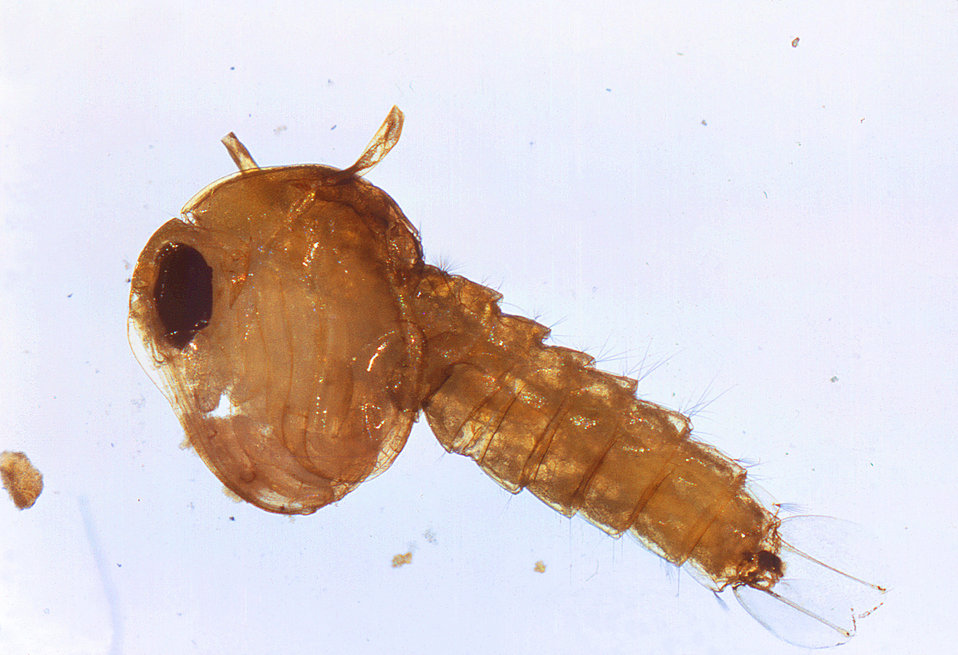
This is an enlarged view of a Culex quinquefasciatus mosquito pupa. The C. quinquefasciatus mosquito is known as one of the many arthropodal vectors responsible for spreading the arboviral encephalitis, West Nile virus (WNV) to human beings through their bite when obtaining a blood meal.